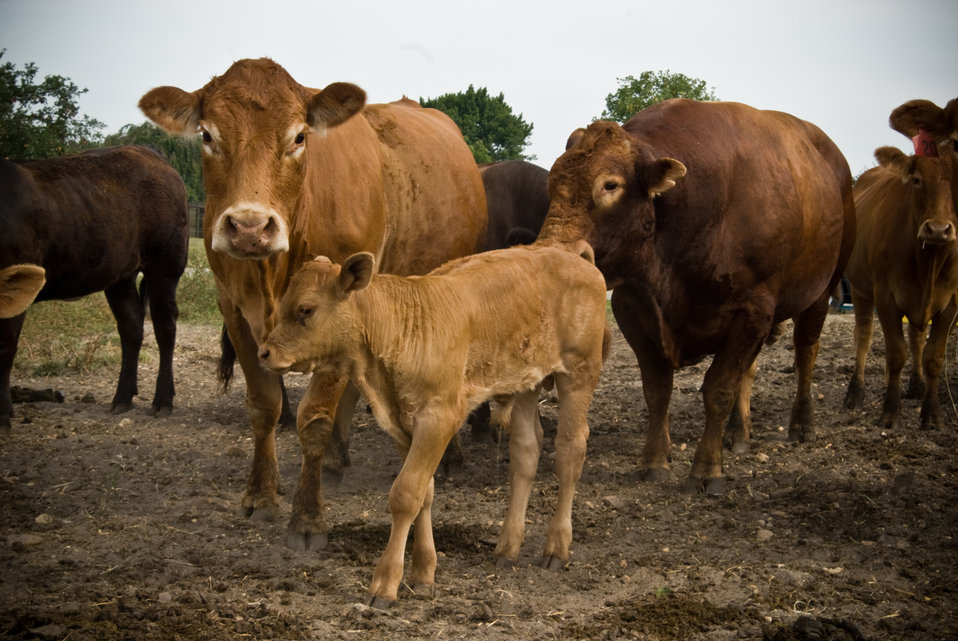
Dairy cows graze on a local farm in Caroline County, Maryland on August 14, 2008.